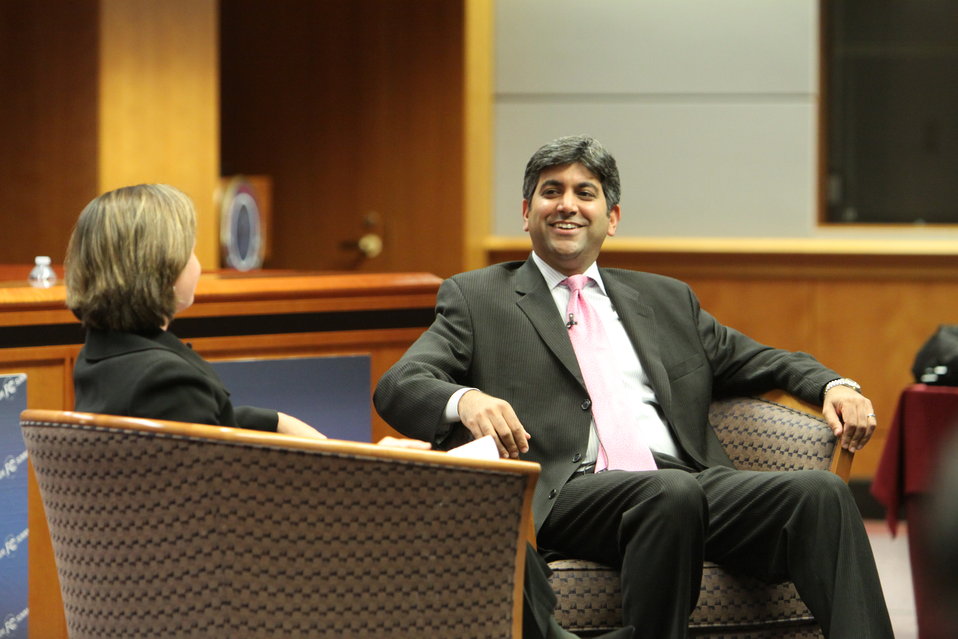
Aneesh Chopra, Chief Technology Officer of the United States and Meredith Attwell Baker, Commissioner, FCC

FCC Spectrum Summit